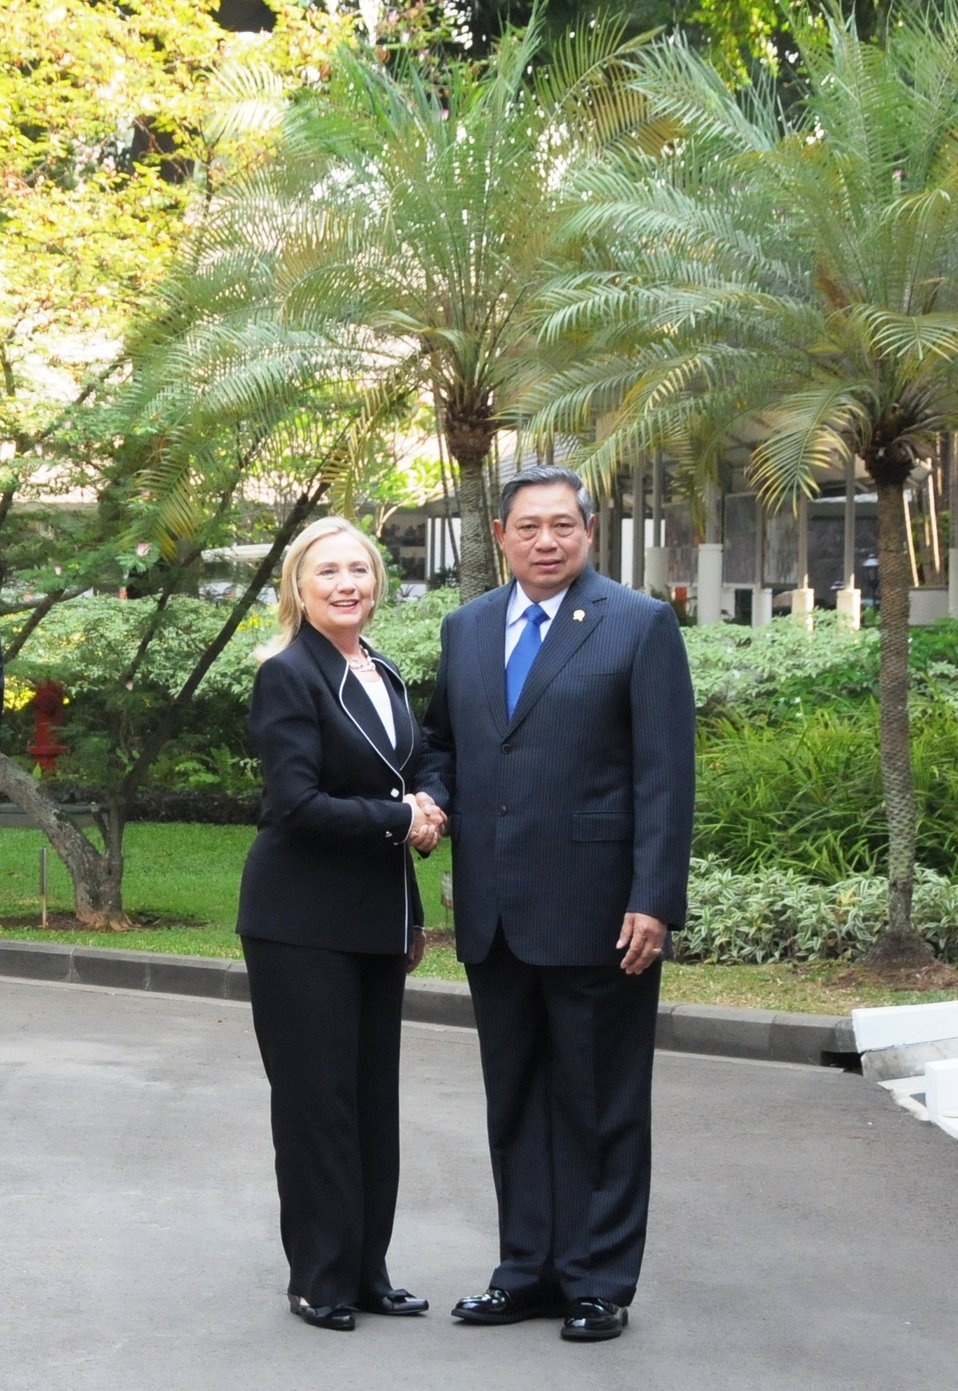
Secretary Clinton Is Greeted By Indonesian President Yudhoyono

U.S. Secretary of State Hillary Rodham Clinton is greeted by Indonesian President Susilo Bambang Yudhoyono in Jakarta, Indonesia, September 4, 2012.